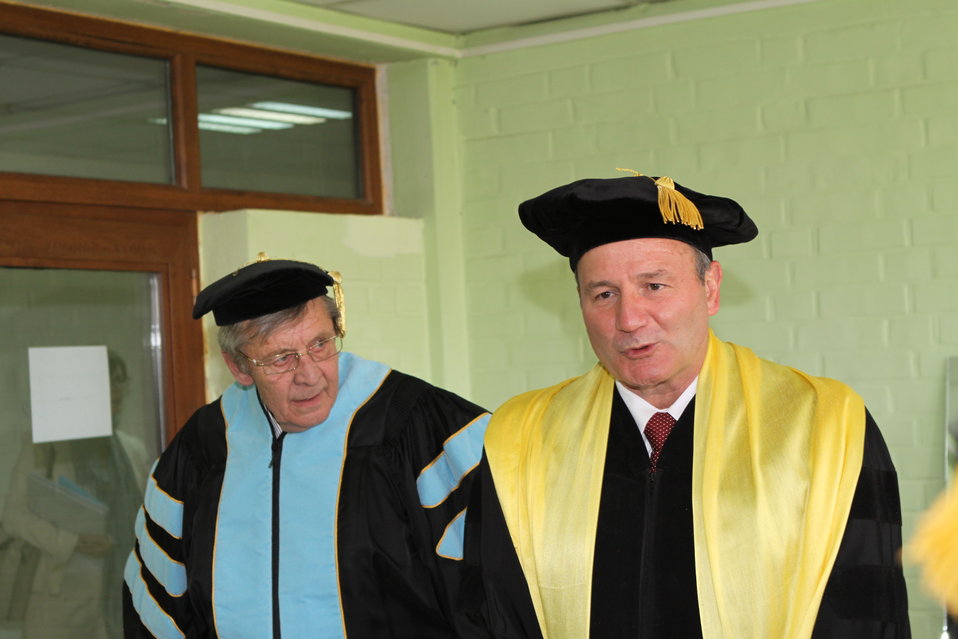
100526 AUAF Graduation 066